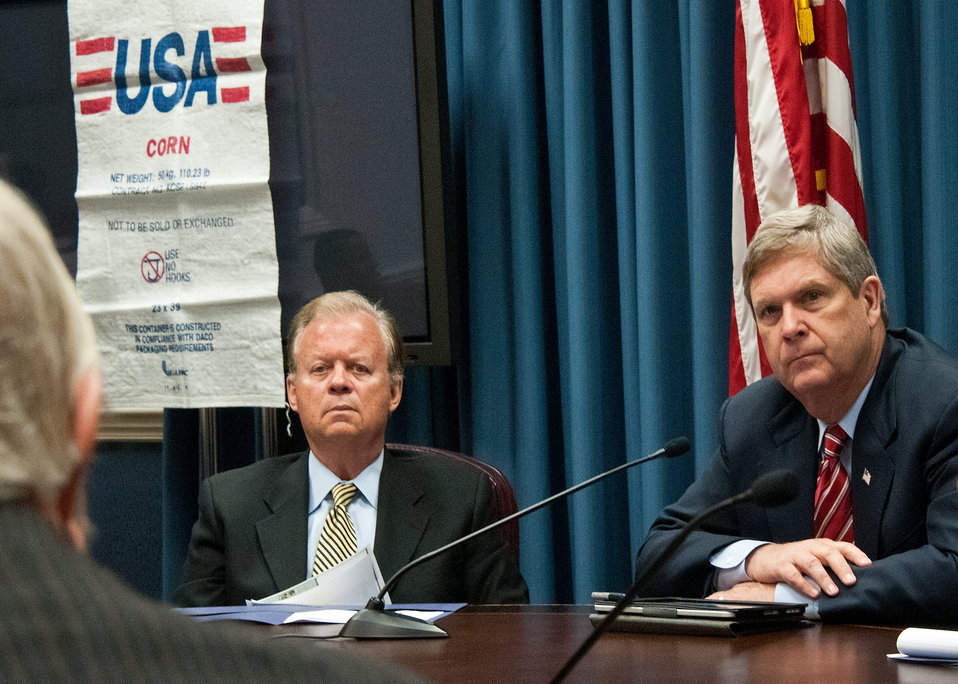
Ambassador and United States Congressman, Retired Tony Hall (left) and Agriculture Secretary Tom Vilsack (right) listen to members of international nonprofit food assistance organizations explain the successes of their programs made available under the Food for Progress and McGovern-Dole International Food for Education and Child Nutrition programs. These two international food assistance programs support global food security and sustainable agriculture production contributing significantly to President Obama’s Feed the Future Initiative. The meeting took place at the United States Department of Agriculture in Washington, DC, Tuesday, May 17, 2011.